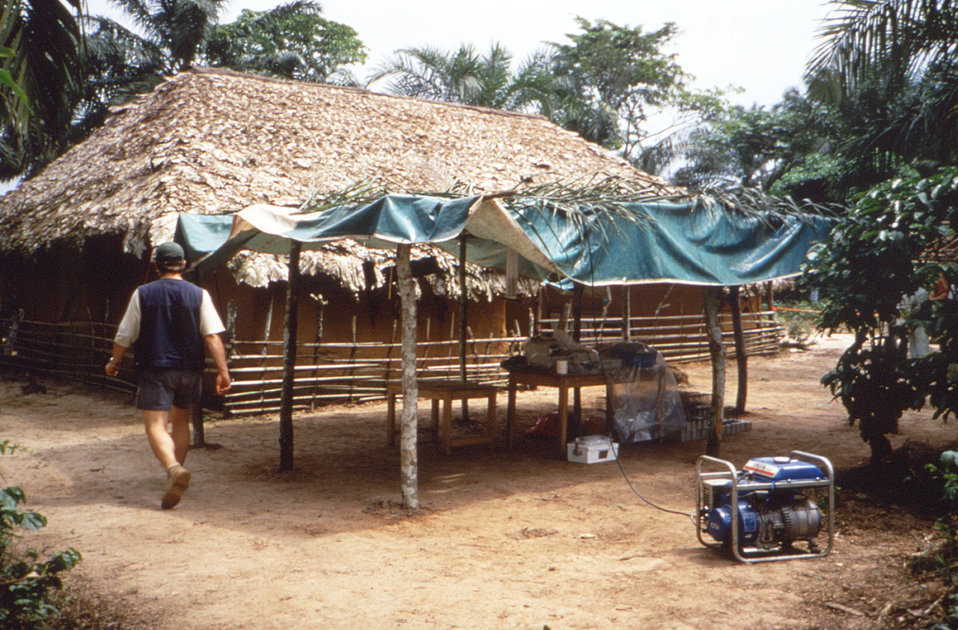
This image was created during an investigation into an outbreak of monkeypox, which took place in the Democratic Republic of the Congo (DRC), 1996 to 1997, formerly Zaire. In this particular view epidemiologist and E.I.S. Officer, Yvan Hutin, M.D., was walking the grounds of a newly-constructed field laboratory located within the Katako-Kombe Health Zone, of the DRC.